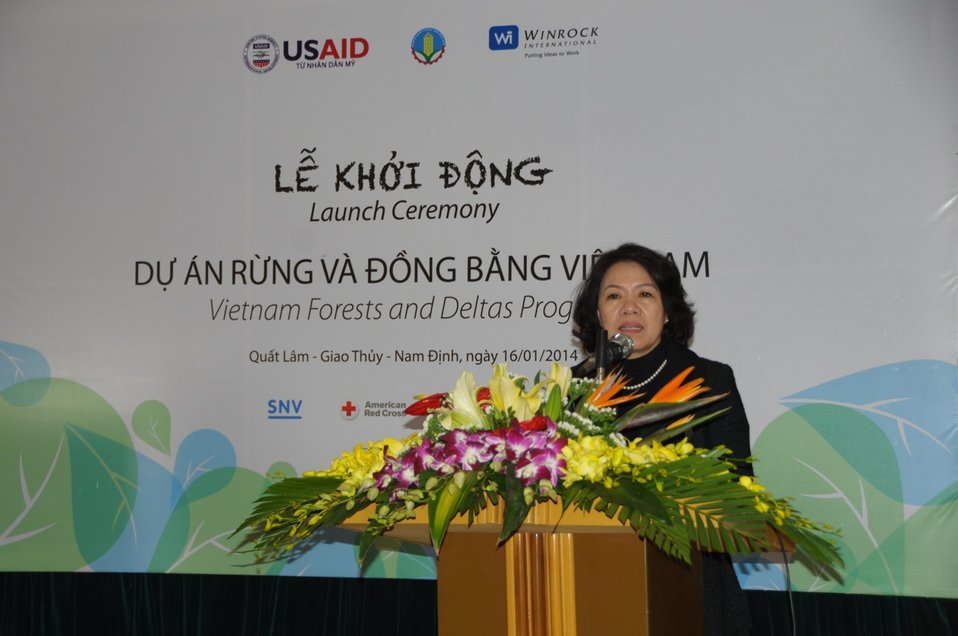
Mrs. Nguyen Thi Xuan Thu, Vice Minister of Agriculture and Rural Development, speaks at the launching event.

Quat Lam, Nam Dinh. January 16, 2014.